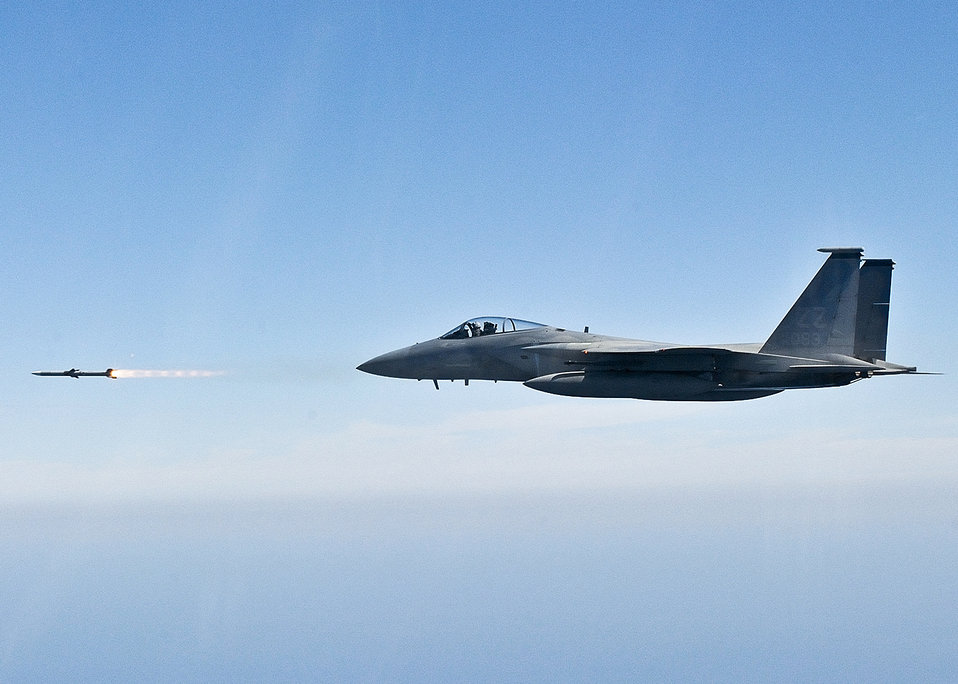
Missile away!

An F-15 Eagle pilot from the 44th Fighter Squadron at Kadena Air Base, Japan, fires an AIM-120 missile May 5, 2011, during an air-to-air weapon system evaluation program mission over the range at Tyndall Air Force Base, Fla.